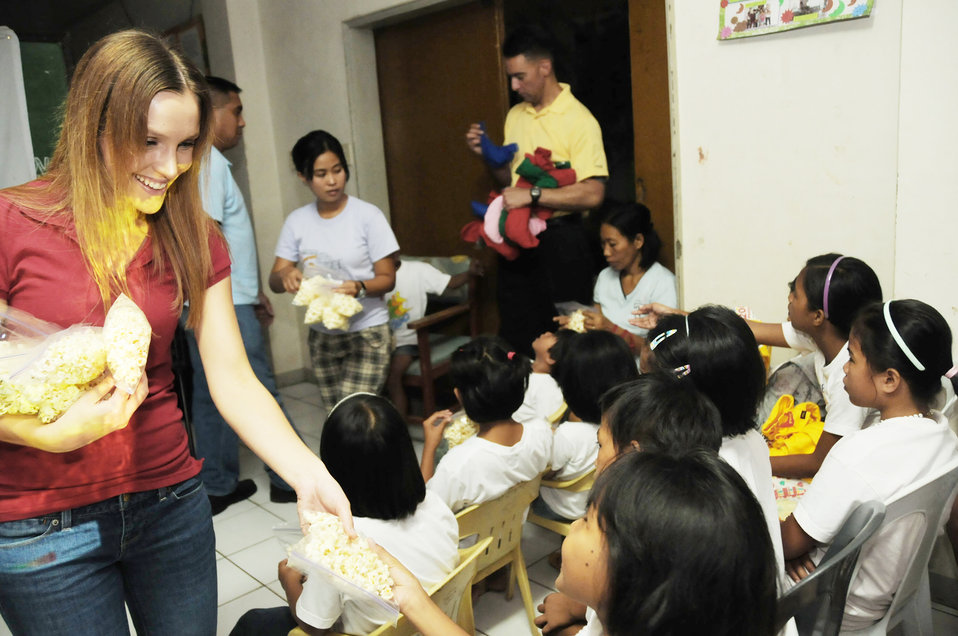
JSOTF-P holiday mission

Staff Sgt. Jessica Brown, assigned to Joint Special Operations Task Force-Philippines, hands out popcorn Dec. 23, 2009, during movie night at the Social Development Center in Zamboanga, Philippines. JSOTF-P members regularly volunteer at the center, which houses abused, neglected or abandoned children. Task force members were at the center handing out holiday stockings and donated linen and curtains for the bedrooms.